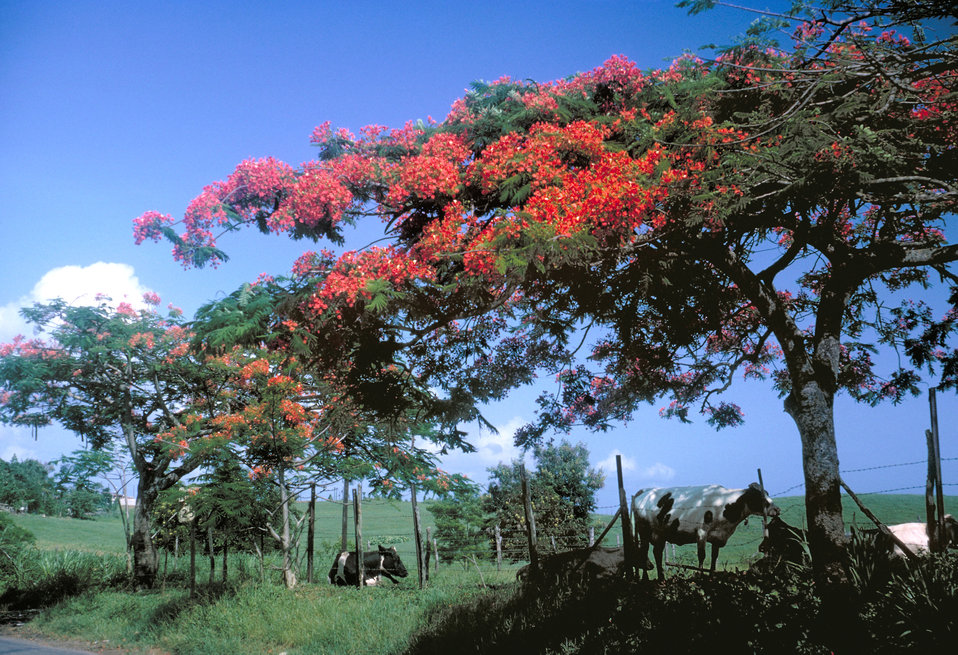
Flame tree and cows, Rio Grande, Puerto Rico.